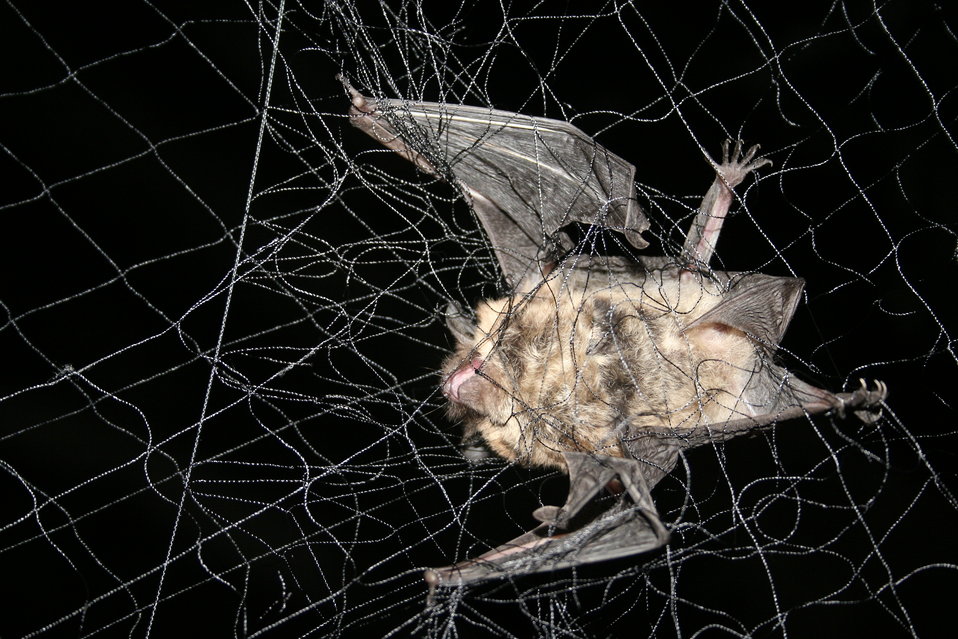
Little brown bat in mist net

little brown bat (Myotis lucifugus)